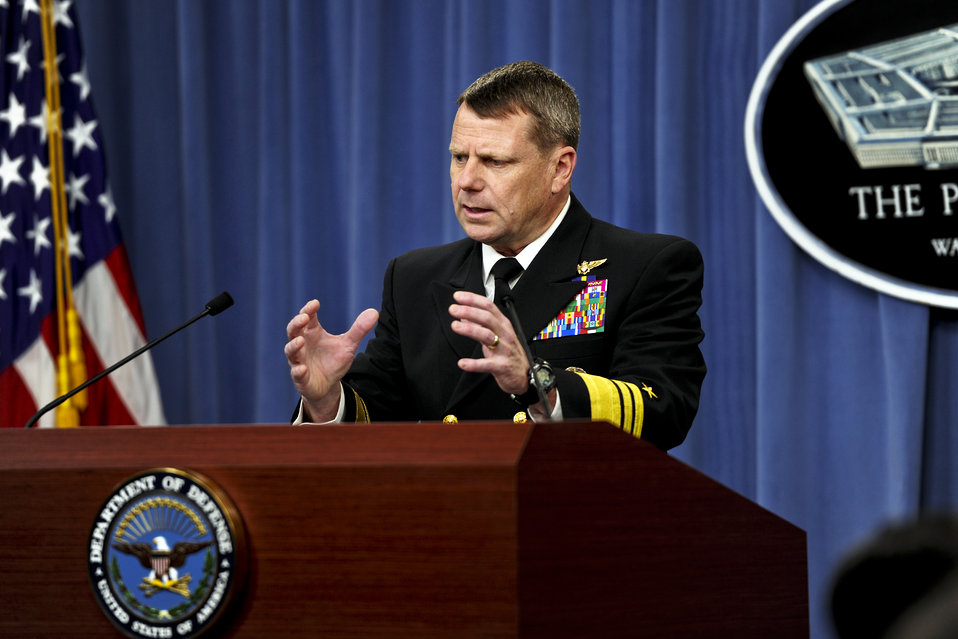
Operation Odyssey Dawn

Navy Vice Adm. William E. Gortney, director of the Joint Staff, briefs the press on